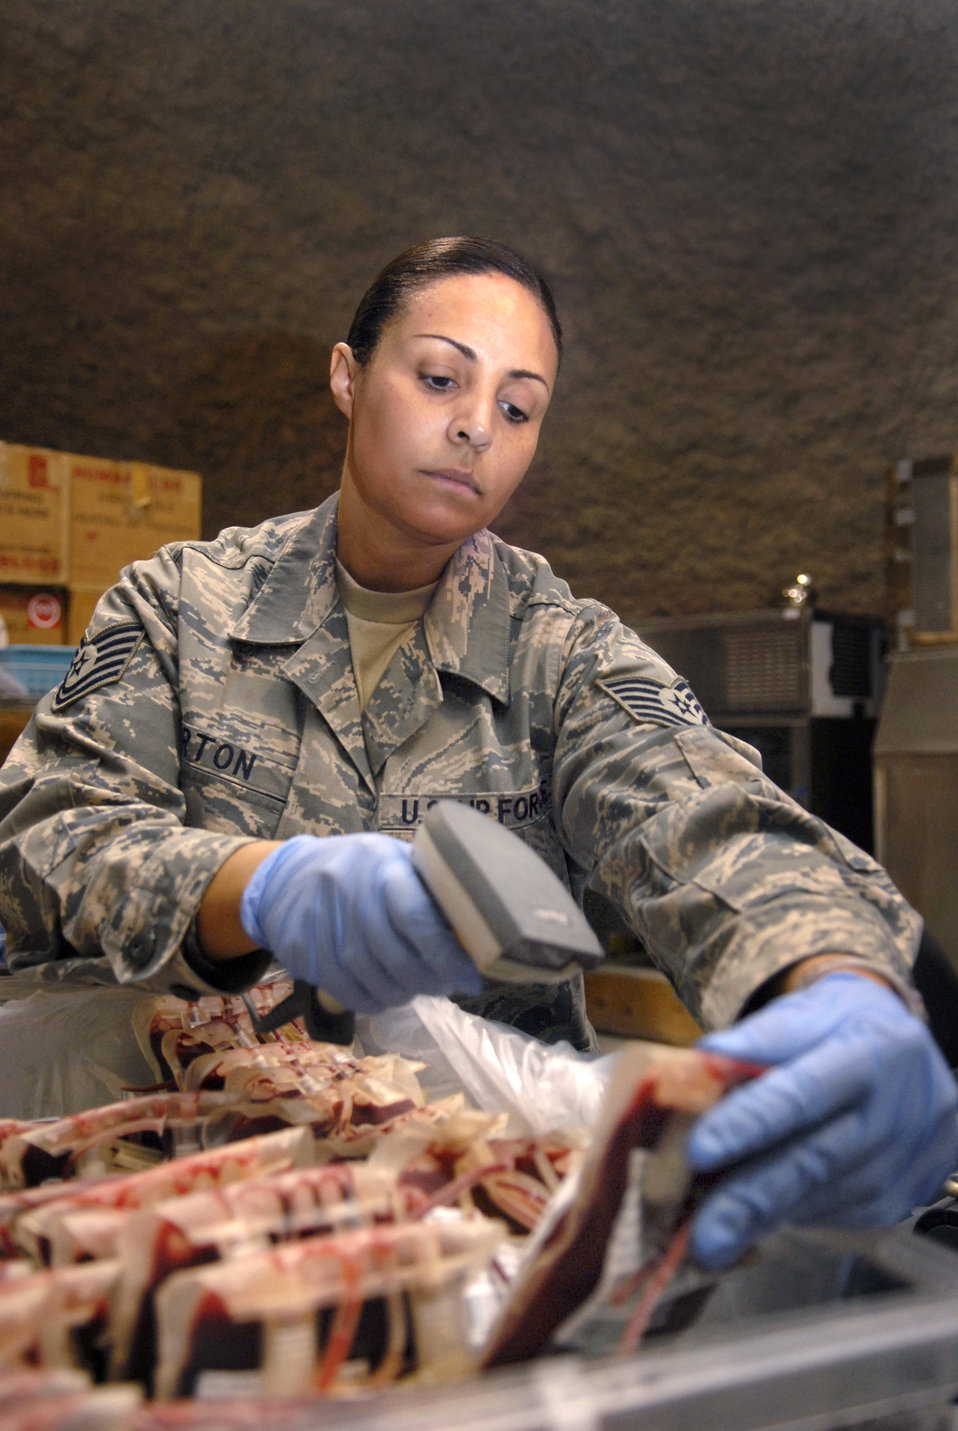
Blood Transshipment Center

Tech. Sgt. Jacqueline Burton scans information from a unit of red blood cells May 9 into a database which monitors and tracks blood products that transit through this air base in Southwest Asia. Sergeant Burton is the 379th Expeditionary Medical Group Blood Transshipment Center NCO in charge.